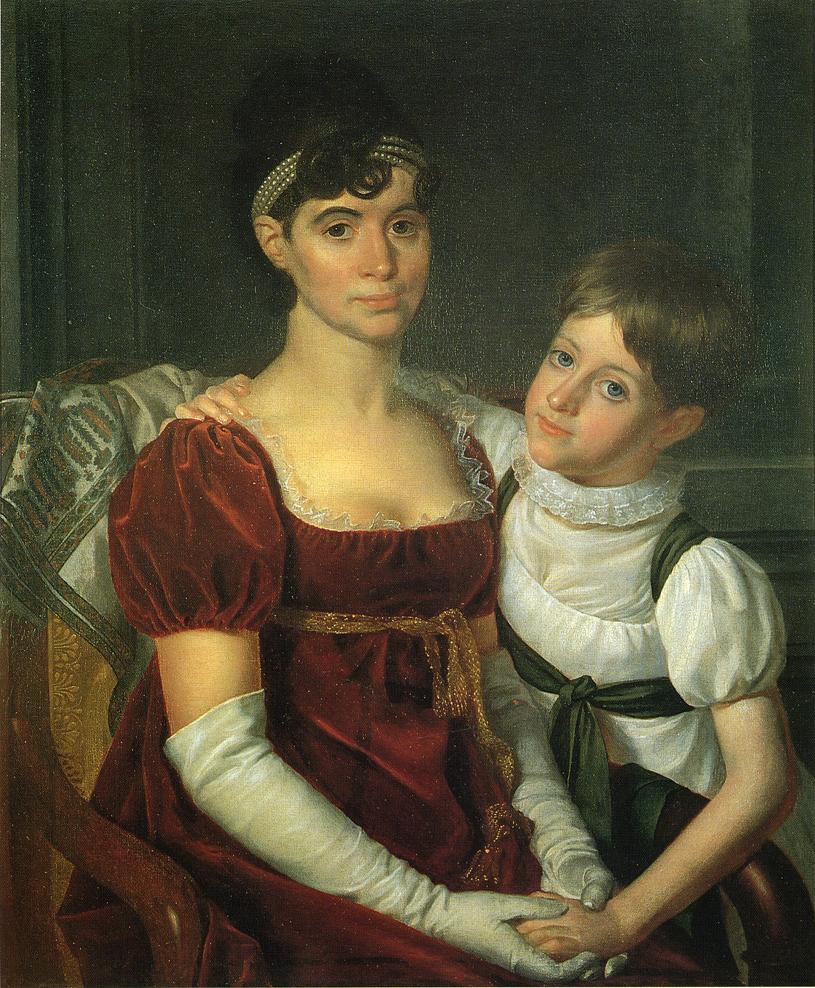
Alida Livingston Armstrong and Daughter